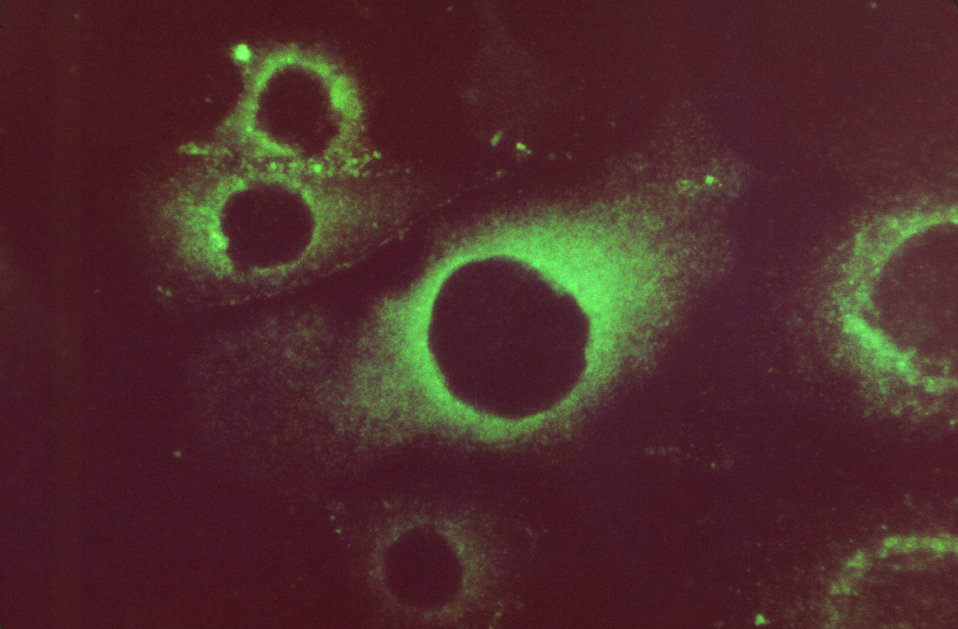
Stained using a fluorescent antibody (FA) technique, this photomicrograph revealed a positive result for this stained serum specimen from a suspected rubella patient.